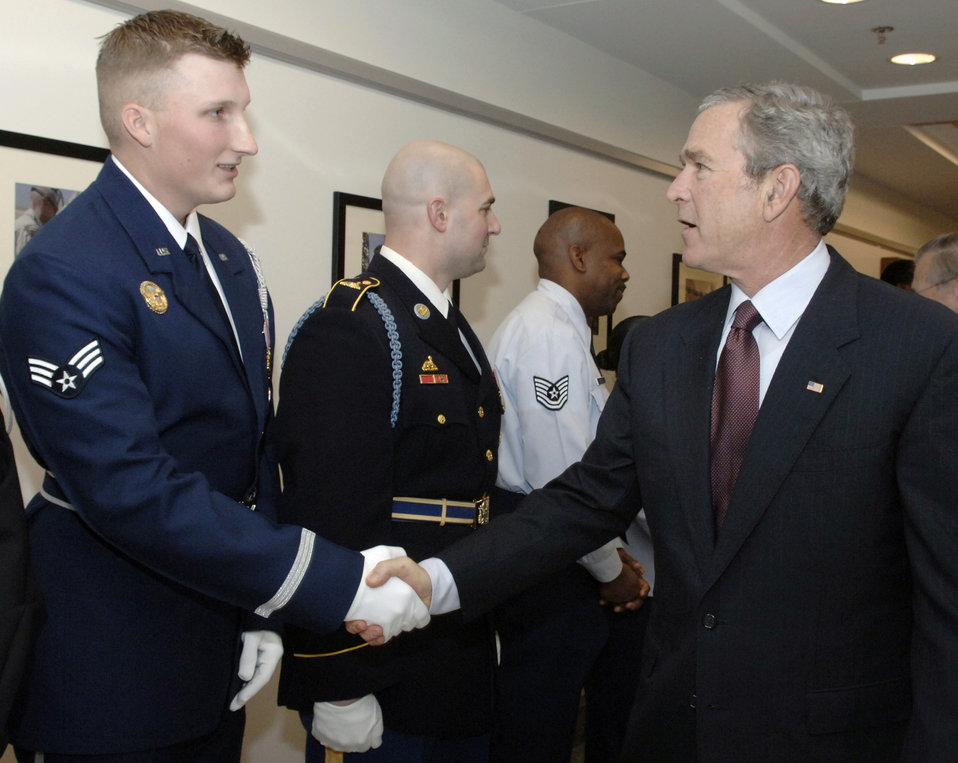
Commander in chief

WASHINGTON (AFPN) -- President George W. Bush shakes hands with Air Force Honor Guard member and Pentagon tour guide, Senior Airman Erik Nelson. The president had just met with senior defense officials in the Pentagon.